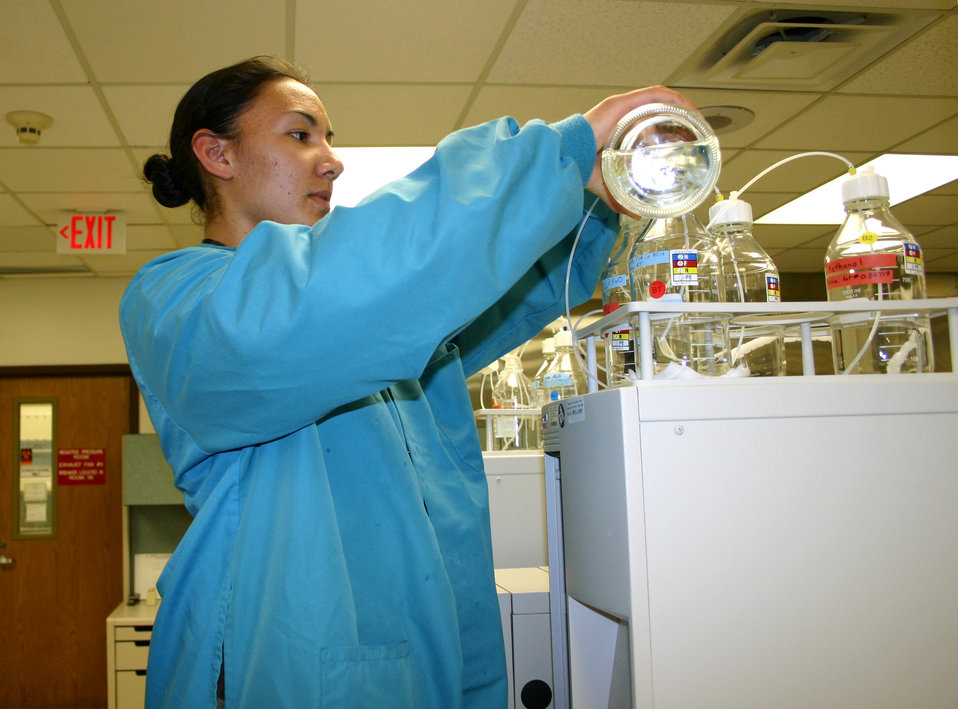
Future of Air Force Medical Service train at Wilford Hall

Cadet 1st Class Michelle Bonneau adds buffer to a protein fractionation system at Wilford Hall Medical Center at Lackland Air Force Base, Texas, on Wednesday, July 5. Cadet Bonneau learned that the system separates proteins and is the first step for protein identification. She is participating in the Cadet Summer Research Program through the U.S. Air Force Academy.